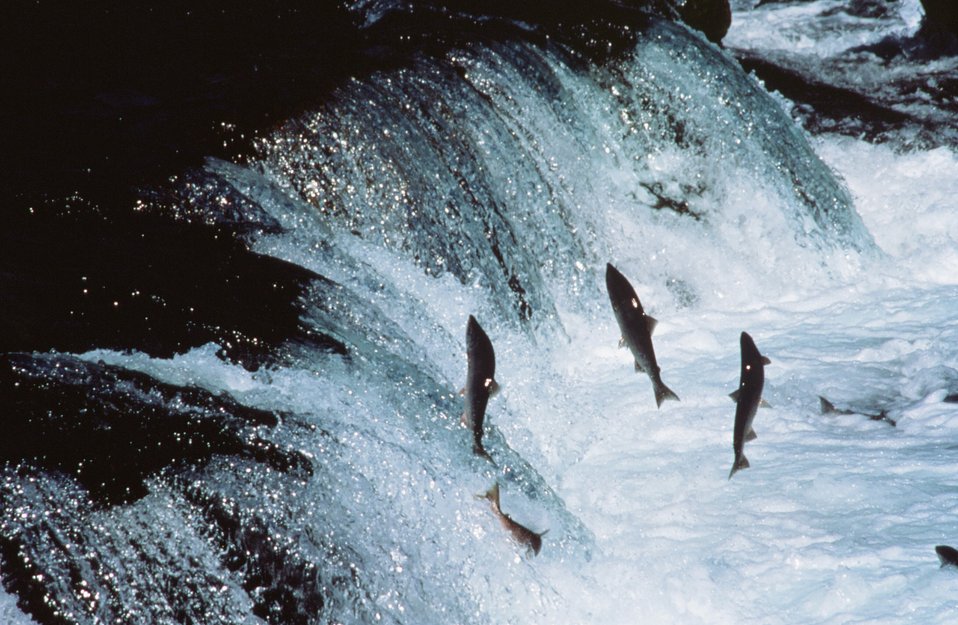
Sockeye Salmon

Adult Sockeye Salmon encounter a waterfall on their way up-river to spawn.